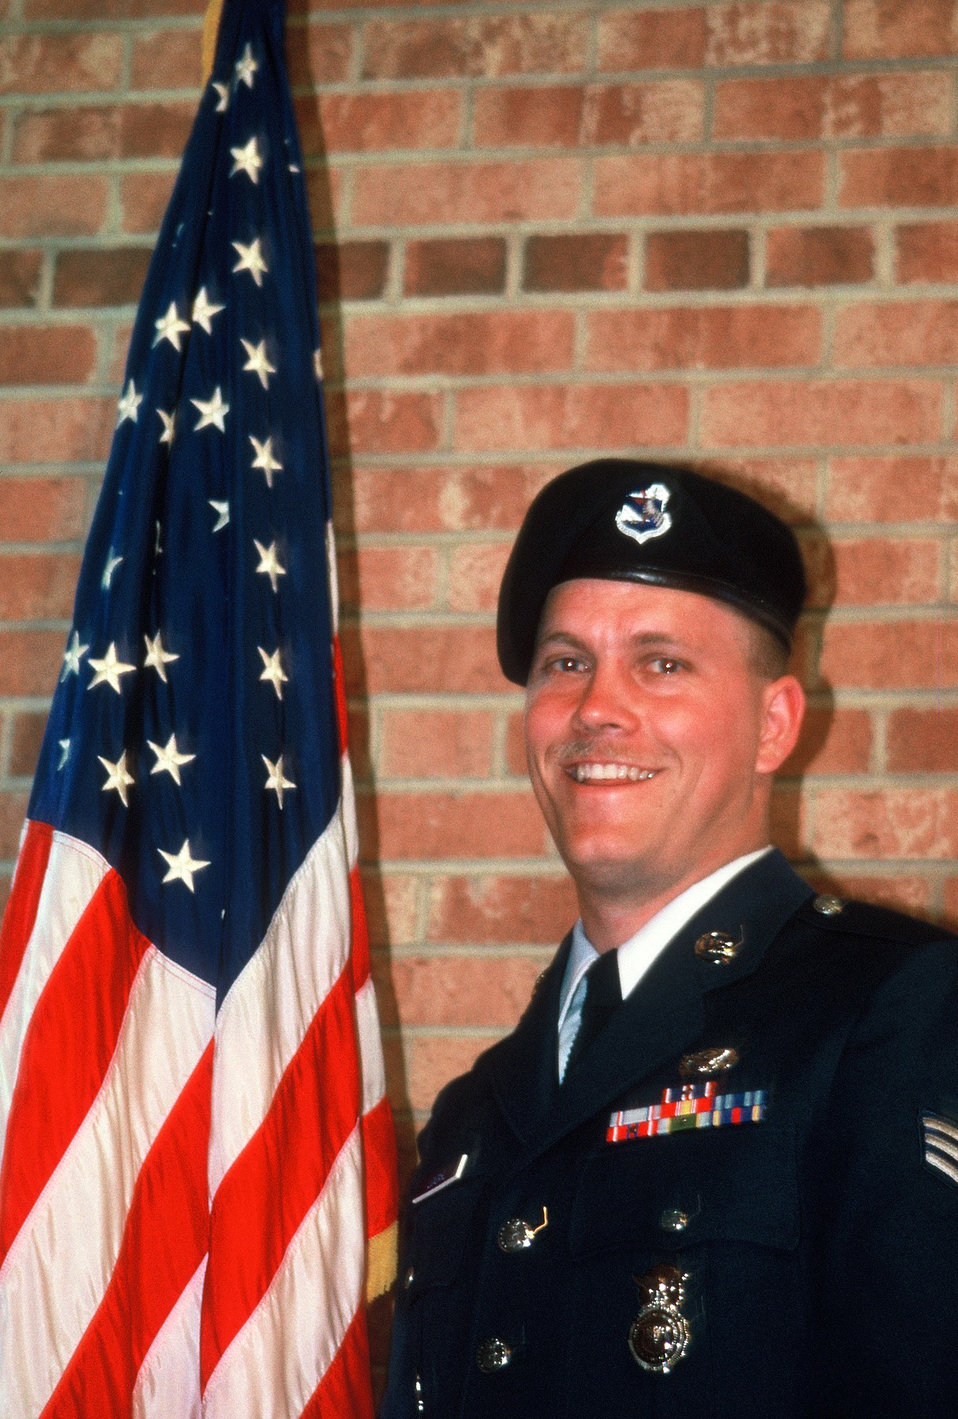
Dan Lovdahl

Retired Master Sergeant Dan Lovdahl, a Contracting Officer in Region 3, served in the Air Force, with 23 years, 2 months & 5 days of Active Duty.